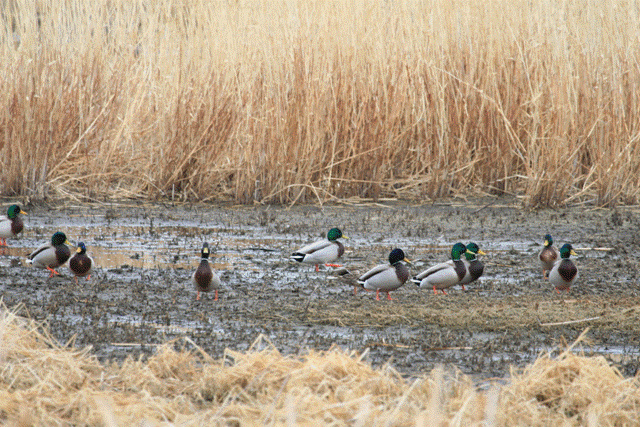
Mallards

Can you spot the only female in the bunch? She is NOT lonely!

Mallards usually form pairs (in October and November) only until the female lays eggs at the start of nesting season, which is around the beginning of spring (early March to late May), at which time she is left by the male who joins up with other males to await the moulting period which begins in June.